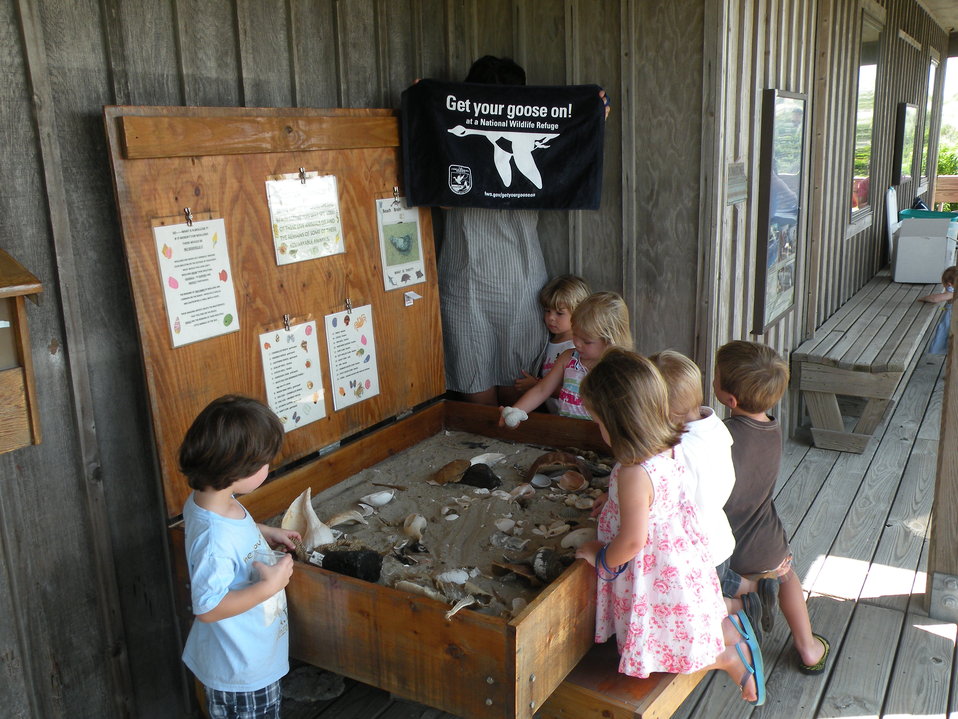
Get Your Goose On!

Outer Banks Mommy and Me group enjoy learning about turtles and Get there Goose on!

Cindy Heffley/USFWS